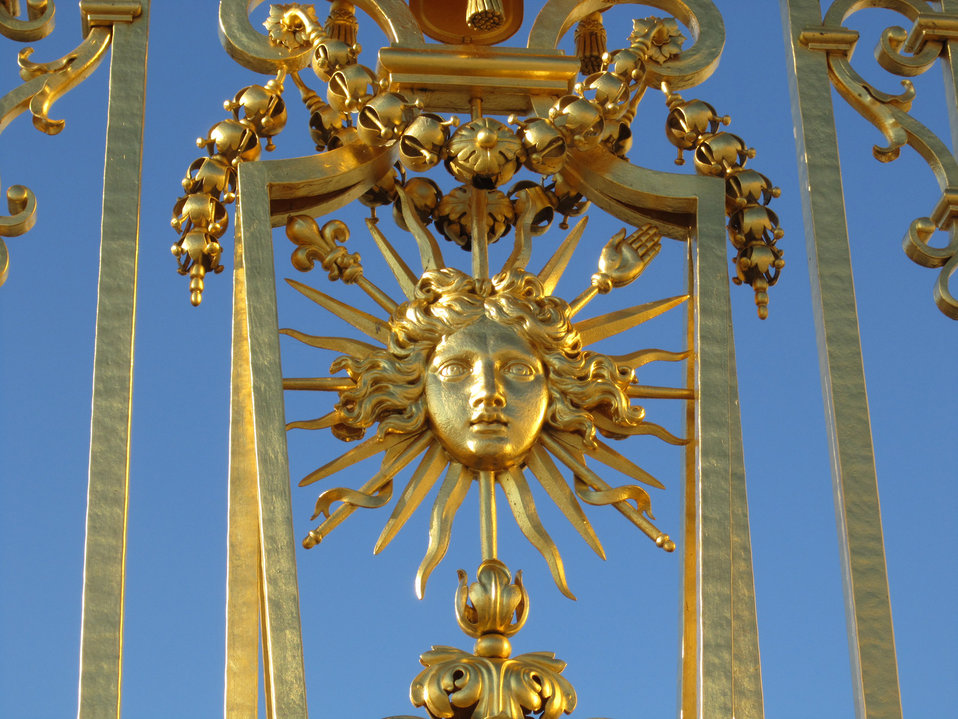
Louis xiv the

Sun king.